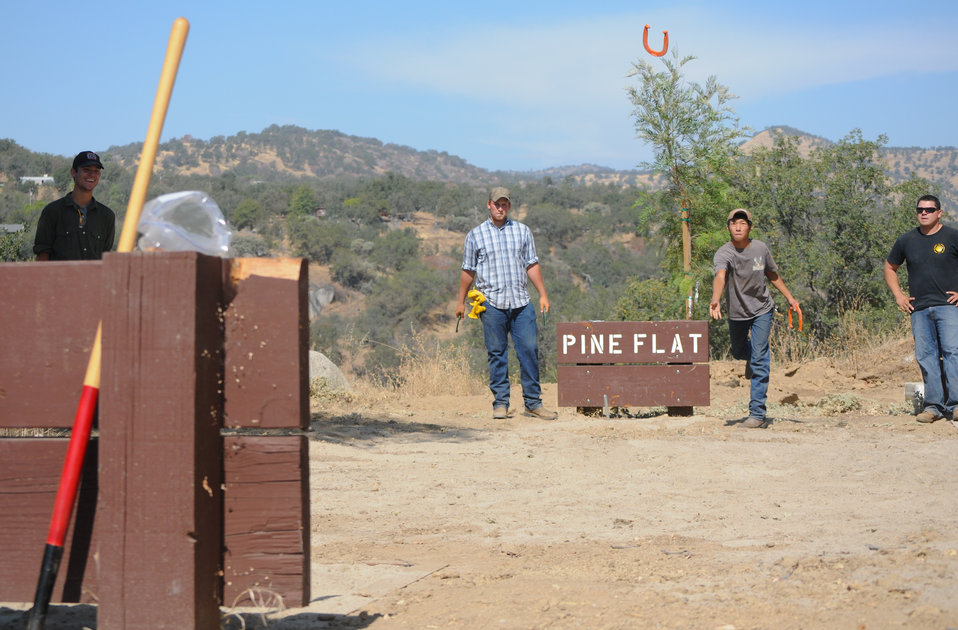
National Public Lands Day at Pine Flat Lake

Volunteers test out one of two new horseshoe pits at Pine Flat Lake near Sanger, Calif., Sept. 24 installed in celebration of National Public Lands Day. More than 60 volunteers turned out to help plant trees and build a new sand volleyball court and horseshoe pits at the park. Pine Flat was one of seven U.S. Army Corps of Engineers Sacramento District recreation parks that participated in the event.